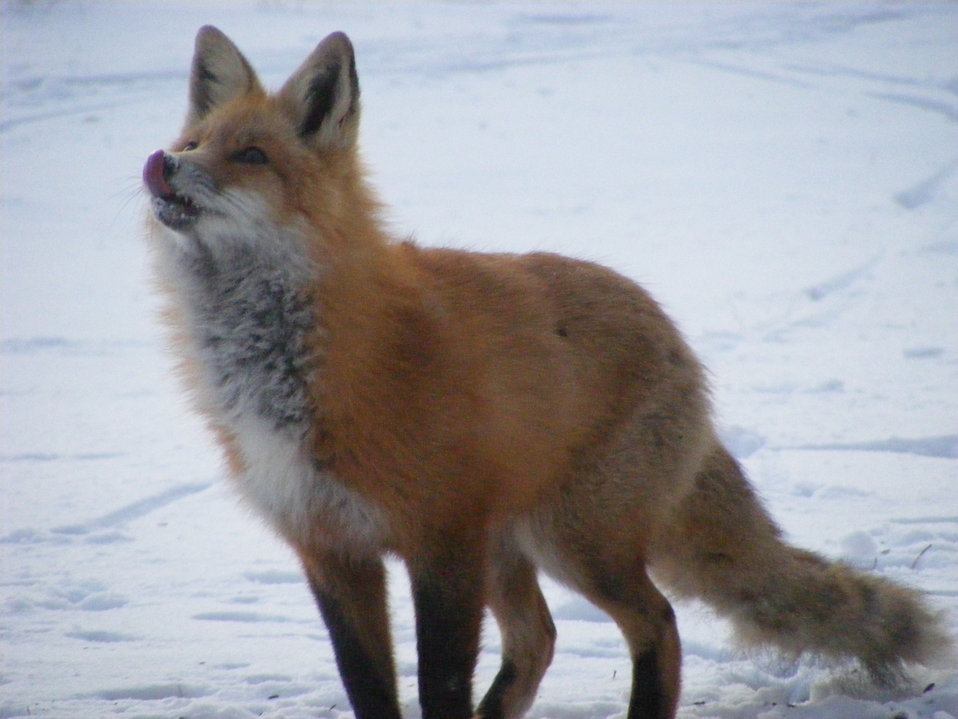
What's for Dinner?

A red fox appears to be licking its chops in anticipation of dinner as it looks up at a bird feeder at Waubay NWR.